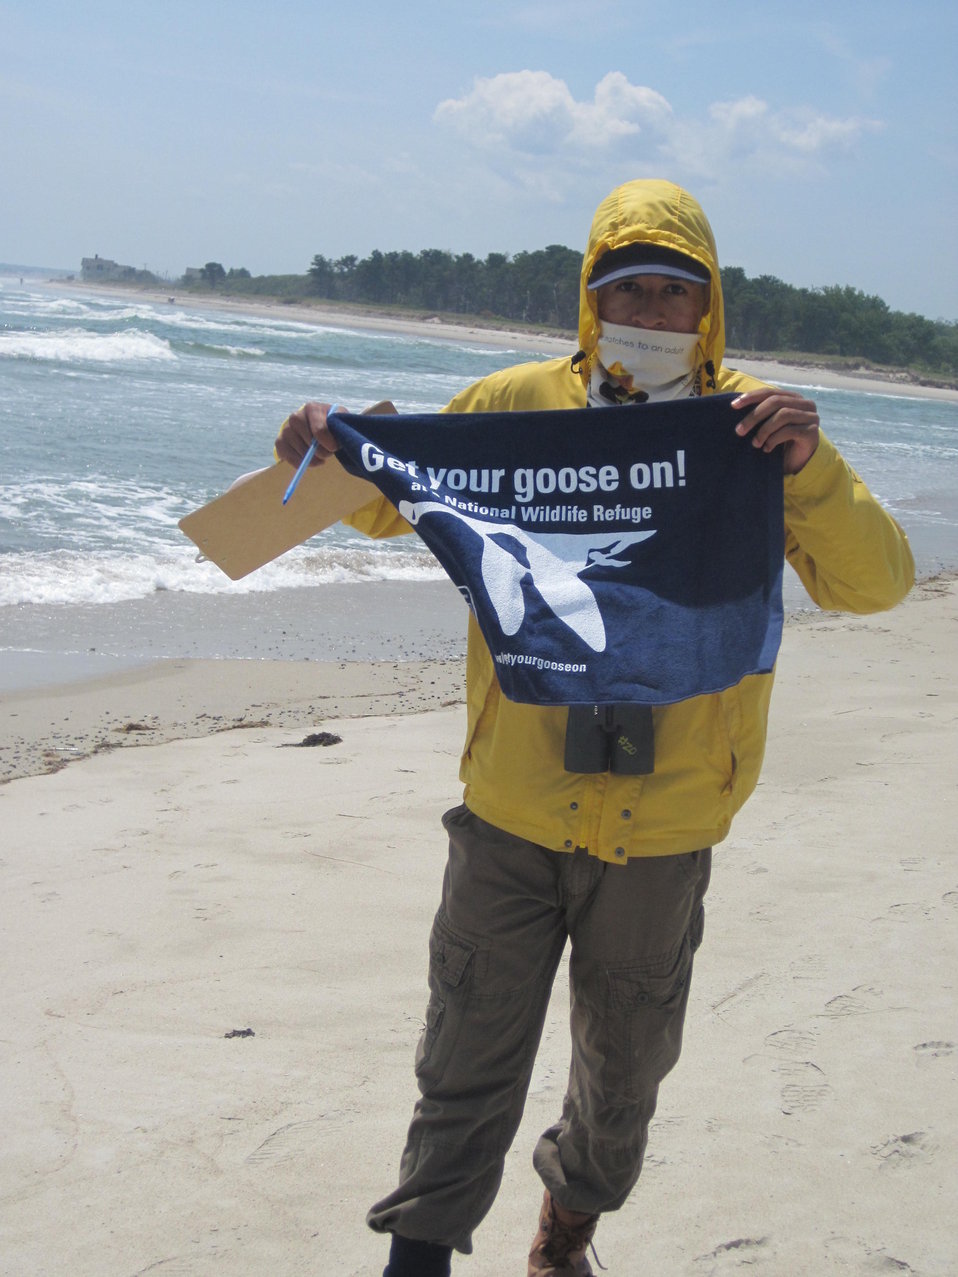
Get Your Goose On!

USFWS employee Ryan Robert covered up to avoid the worst of least tern poo.